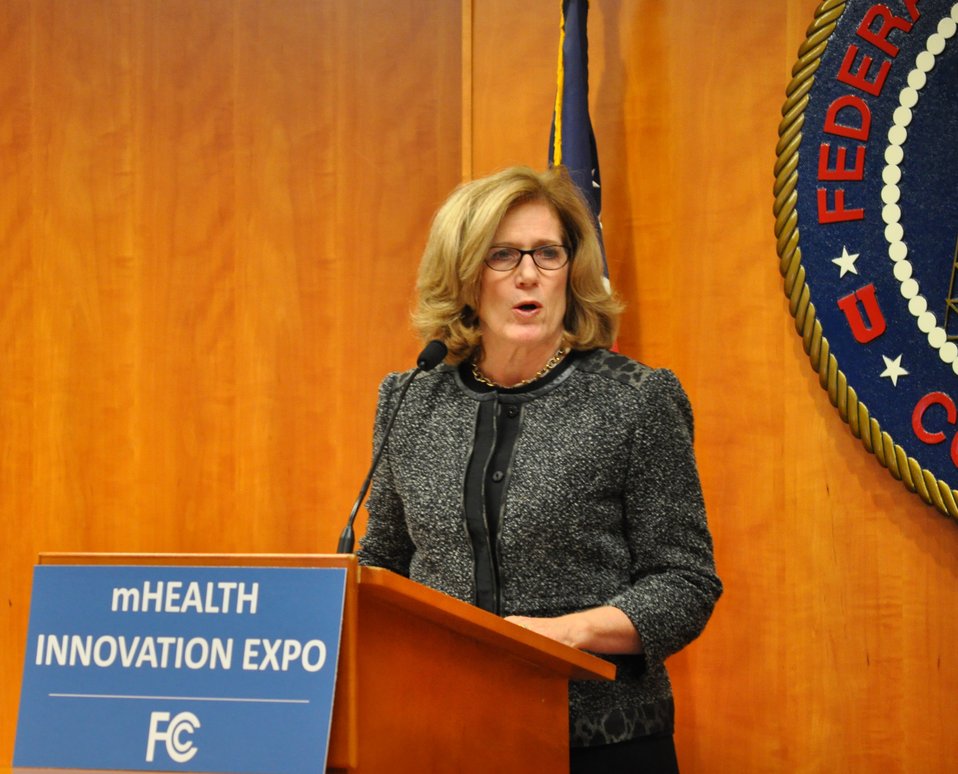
12.6.13 mHealth Innovation Expo

Kris Monteith, Acting Bureau Chief, CGB, FCC